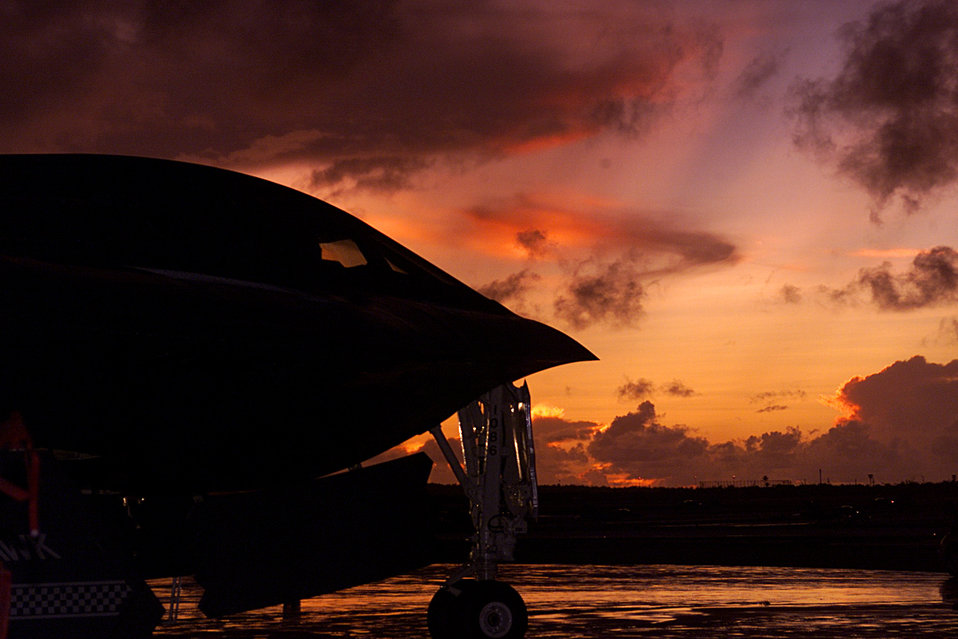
Spirit and the sky

ANDERSEN AIR FORCE BASE, Guam (AFPN) -- A B-2 Spirit bomber from Whiteman Air Force Base, Mo., is silhouetted by a Pacific sunset. Two B-2s and 100 support airmen are here for Operation Coronet Dragon 49, a forward-deployment exercise. The exercise will test the B-2's new satellite communications system.